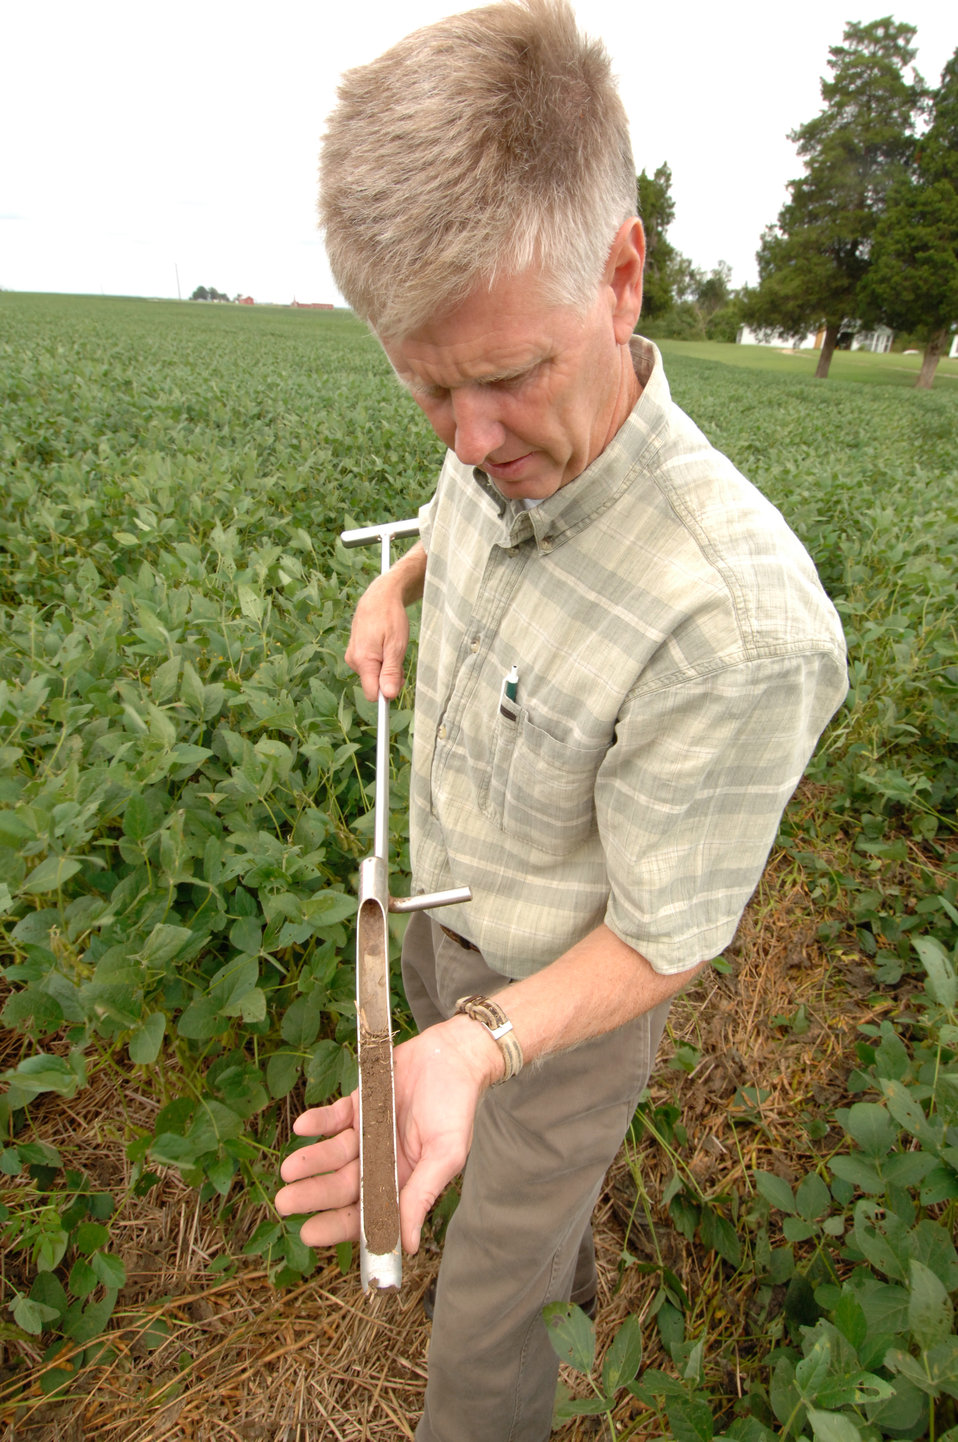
U.S. Department of Agriculture (USDA) Natural Resource Conservation Service (NRCS) crop consultant draws a soil sample to test the nitrogen availability in the soil on a Virginia farm on September 11, 2008. This nitrogen test is meant to decide whether and how much nitrogen the growing crop needs for optimum production and only the amount of nitrogen needed will be applied.